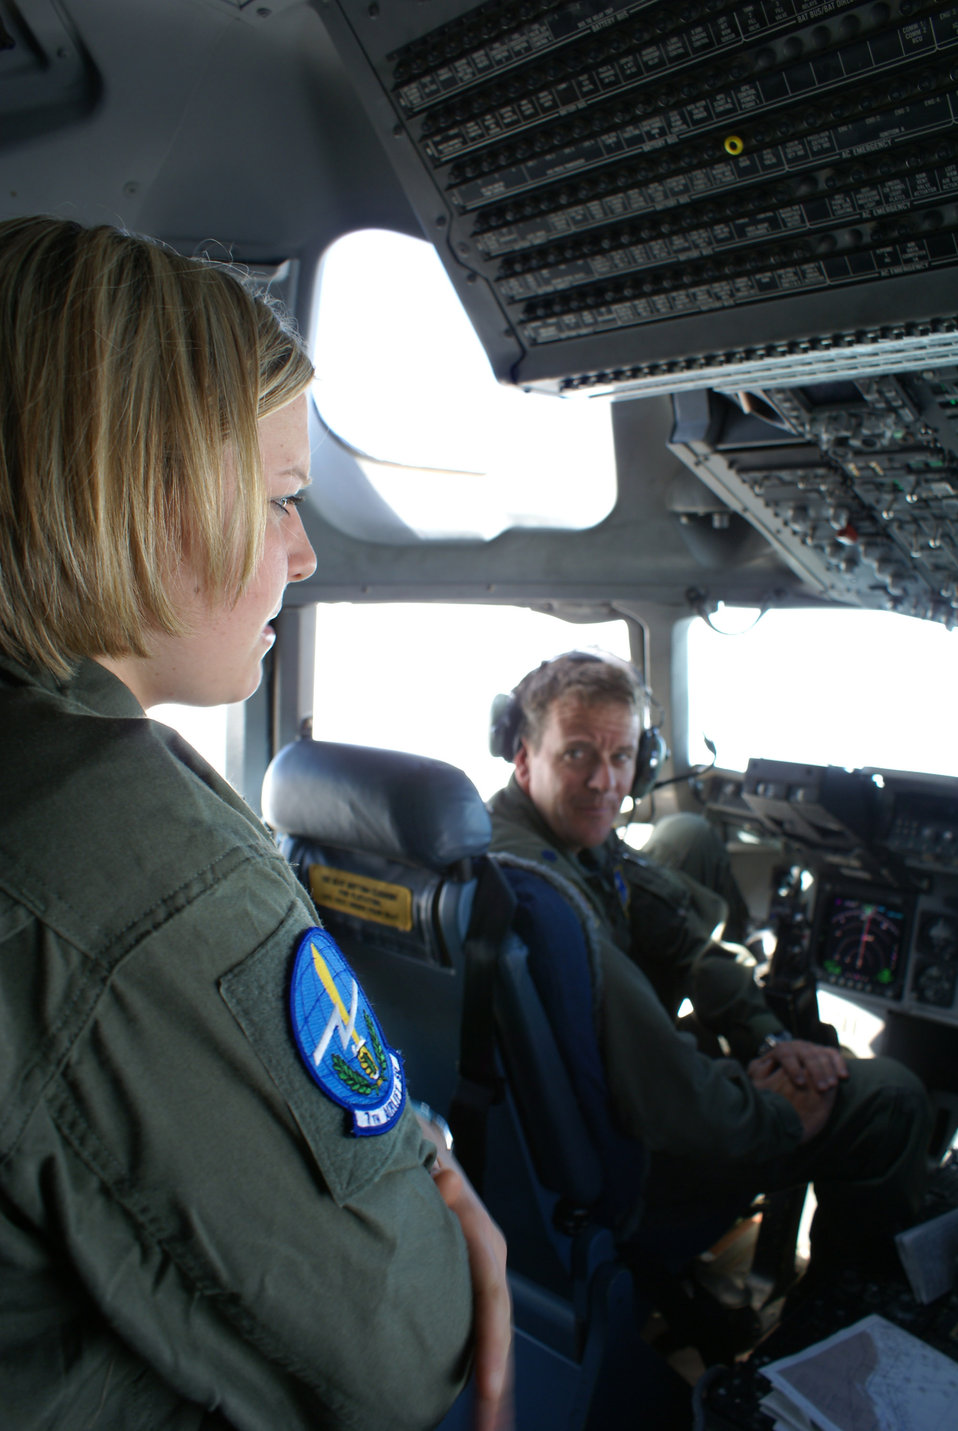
Cadets learn mission through Operation Air Force

U.S. Air Force Academy Cadet 3rd Class Carly Olsowski talks with Lt. Col. Douglas Patterson during the June 16 flight on board a C-17 Globemaster III from Hickam Air Force Base, Hawaii, to McChord AFB, Wash. The cadets flew as part of Operation Air Force, a career-broadening program. Colonel Douglas is a 313th Airlift Squadron pilot.